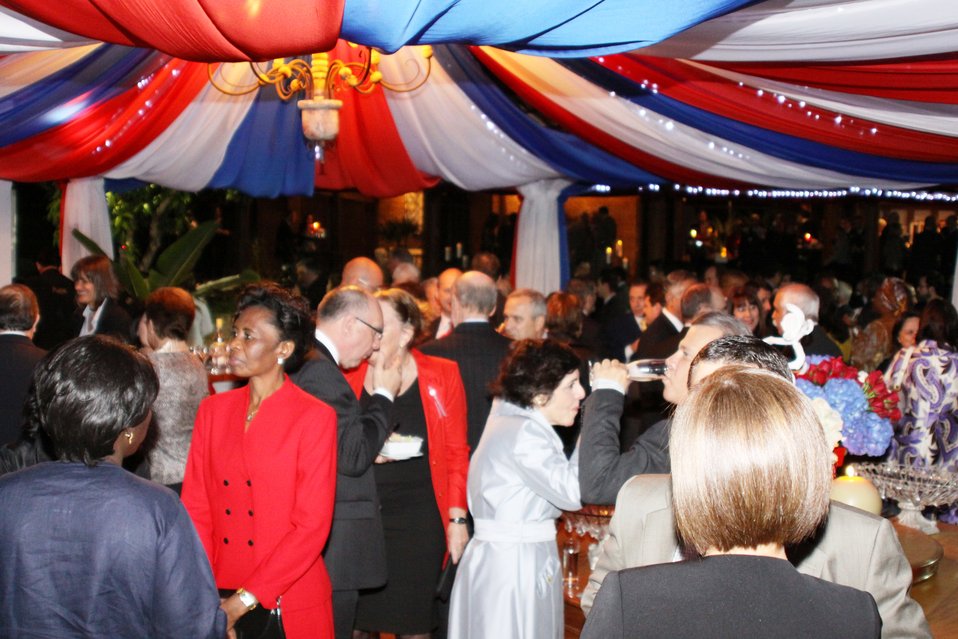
July 4th Celebration at U.S. Embassy in Brazil

Brazilian officials, diplomats, business and cultural leaders celebrate 234 years of America’s independence with the U.S. Mission in Brazil at the Ambassador’s residence in Brasilia, Brazil, on July 1, 2010.